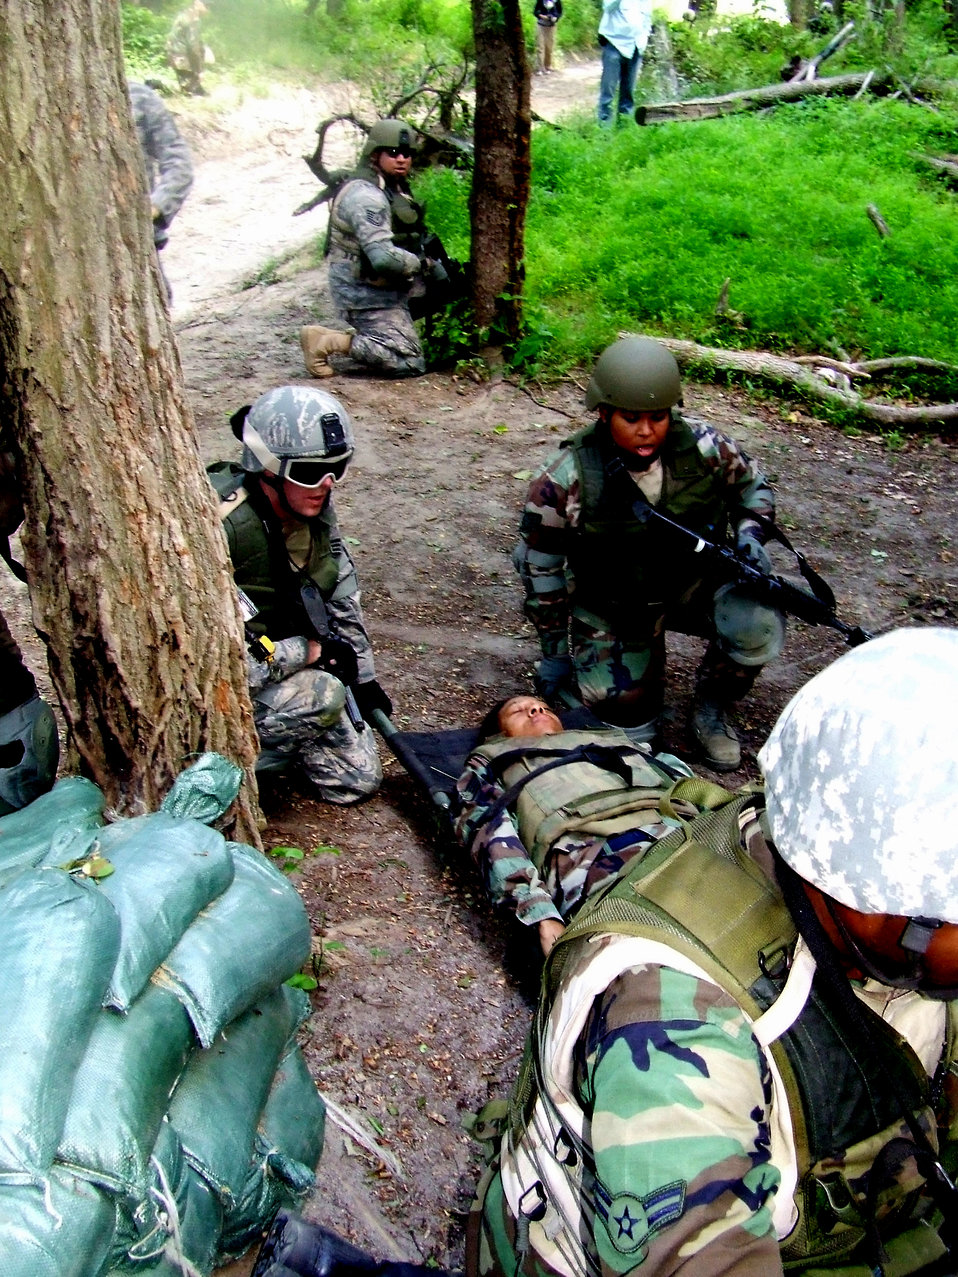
Warriors play

Students in the Air Force Phoenix Warrior Training Course participate in a combat first aid class June 19 at Fort Dix, N.J. The course is taught by the Air Force Expeditionary Center's Expeditionary Operations School and 421st Combat Training Squadron insturctors and prepares security forces Airmen for upcoming deployments.